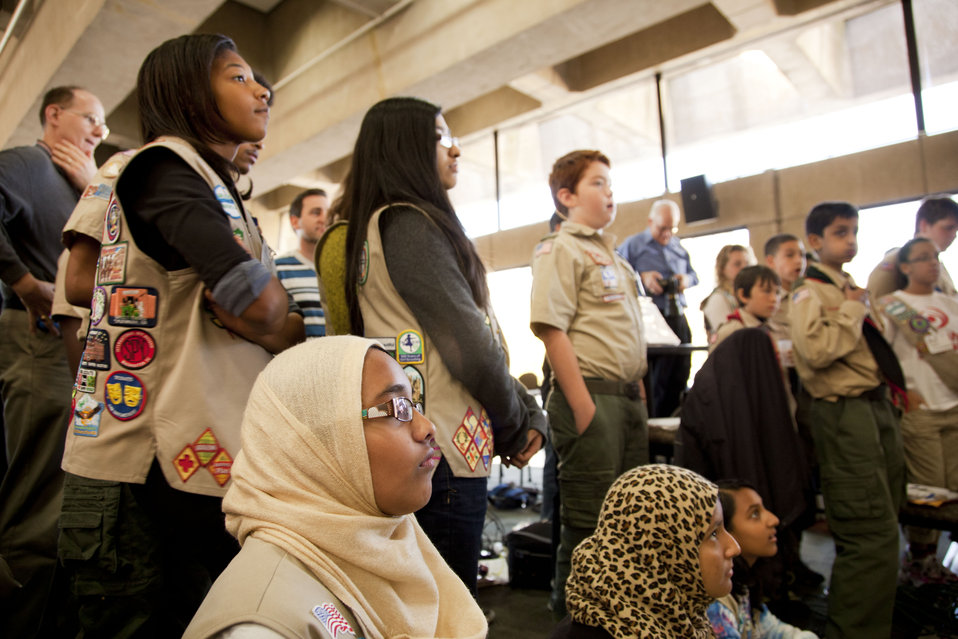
Students watch a demonstration at the Energy Action Month merit badge and patch event.